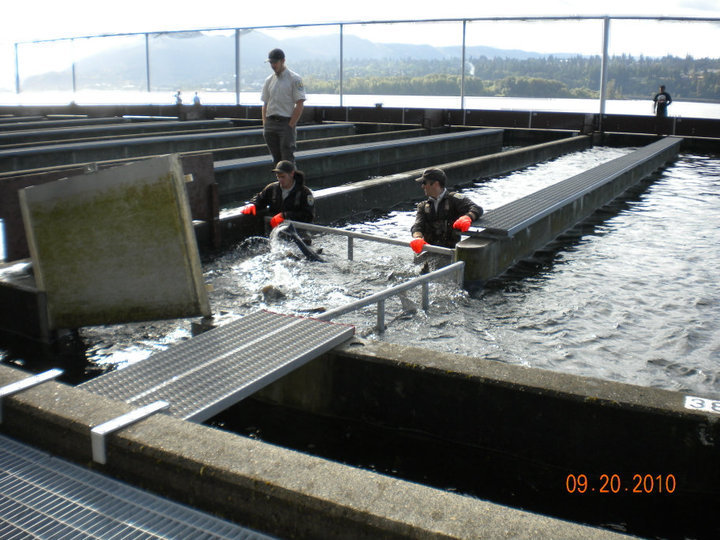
Spring Creek NFH employees in raceways